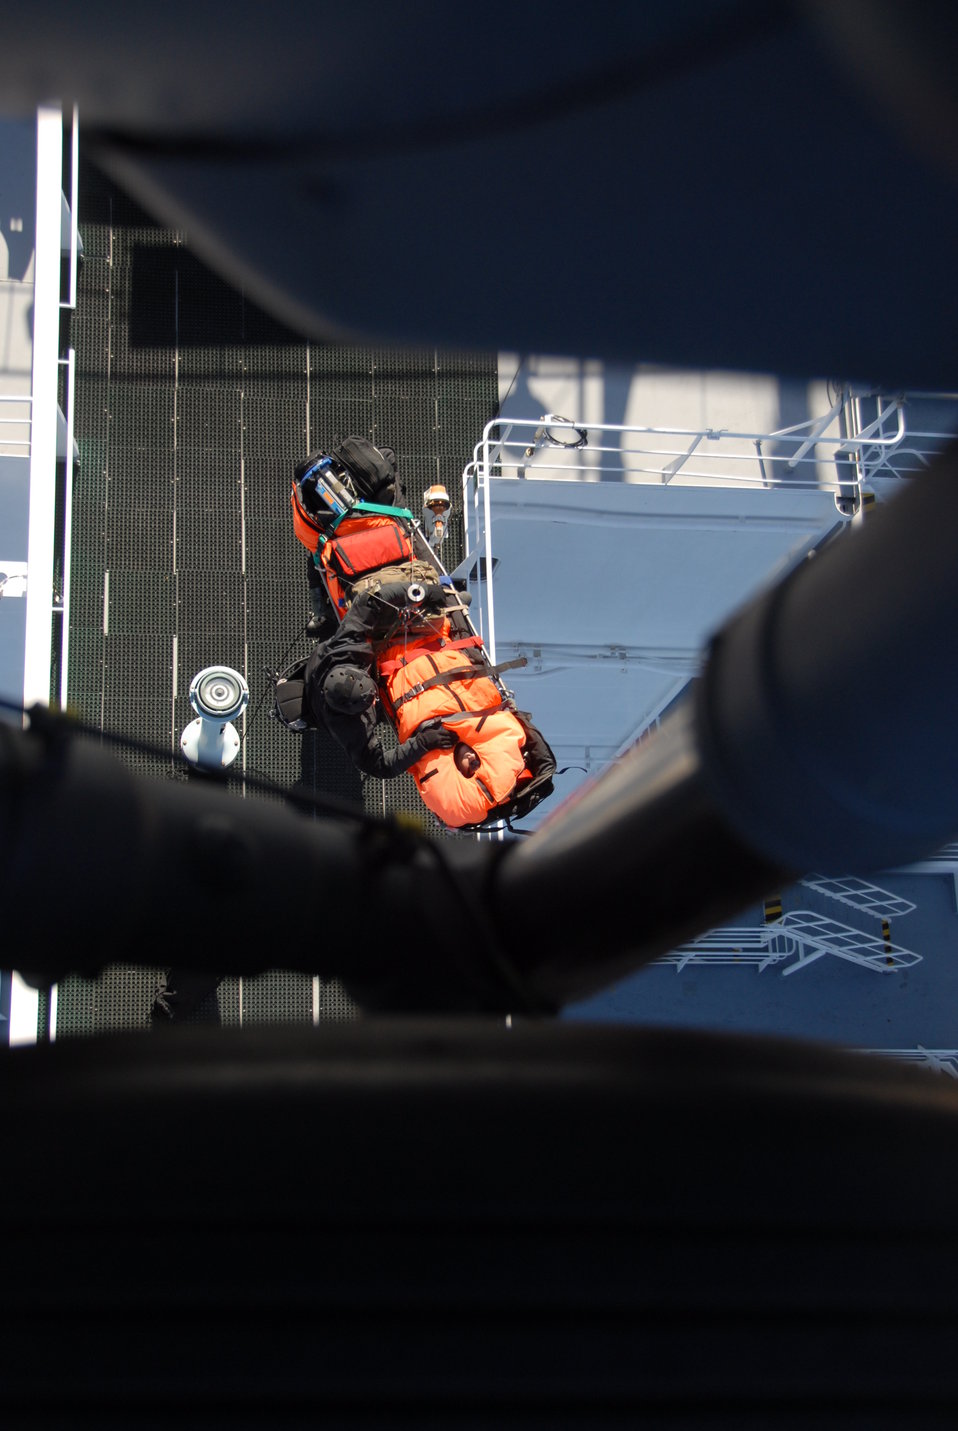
Patient prep

Staff Sgt. Adam Vanhaaster attaches a hoist to a patient’s litter to be lifted into a HH-60G Pave Hawk rescue helicopter Feb. 4, 2012, 200 miles off the coast of California. Responding to a call from the Eleventh District Coast Guard at Alameda, Calif., pararescuemen, two Pave Hawks and one MC-130P Combat Shadow aircraft, all from the 129th Rescue Wing, rescued a man suffering stroke-like symptoms aboard the MSC Beijing. Vanhaaster is a pararescueman assigned to the 131st Rescue Squadron at Moffett Federal Airfield, Calif.